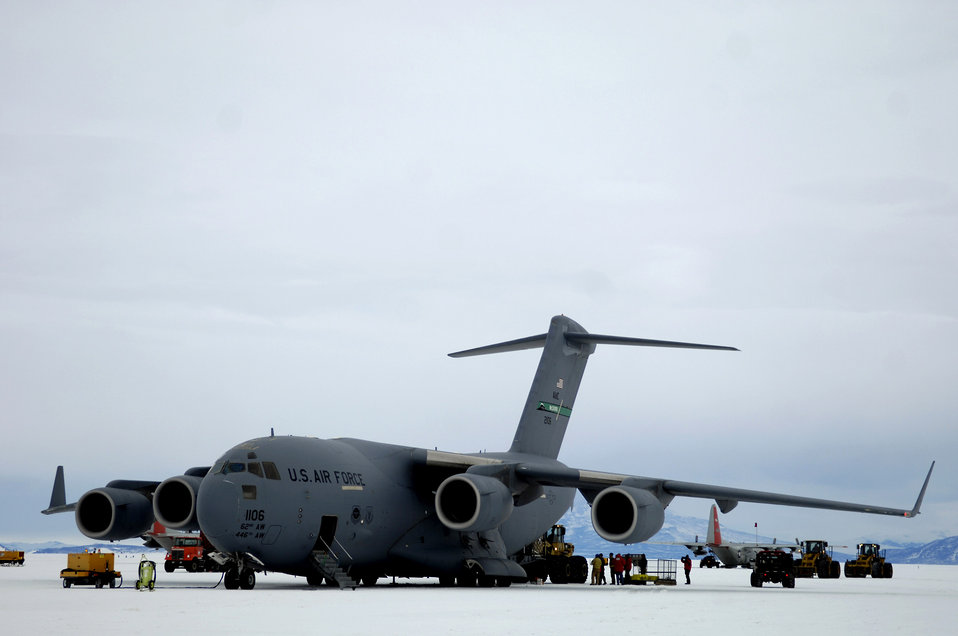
Airmen support Operation Deep Freeze

Equipment is offloaded from a C-17 Globemaster III Nov. 22 at McMurdo Station, Antarctica. Reserve and active duty Airmen from McChord Air Force Base, Wash., are staging at Christchurch, New Zealand, to support the 13th Air Force-led Joint Task Force Support Forces Antarctica's Operation Deep Freeze.